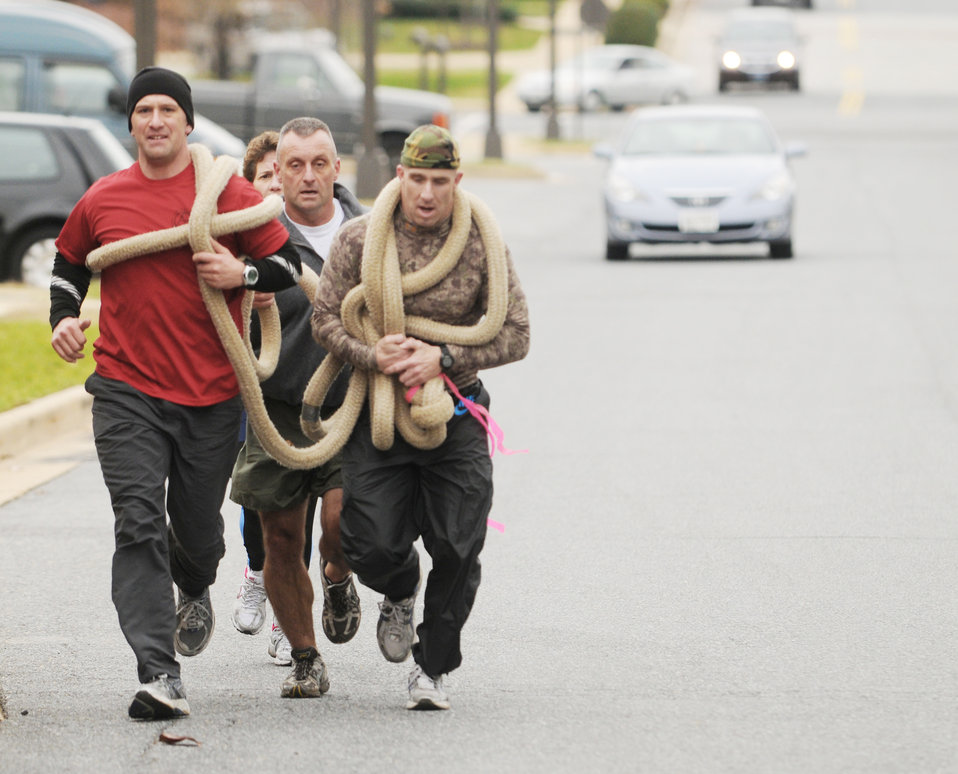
Bolling members take 'Amazing Race' challenge

Team Purple members carry a rope uphill during an obstacle course competition Dec. 4, 2009 on Bolling Air Force Base, D.C. Team Purple came in first across the finish line at 1 hour and 3 minutes.